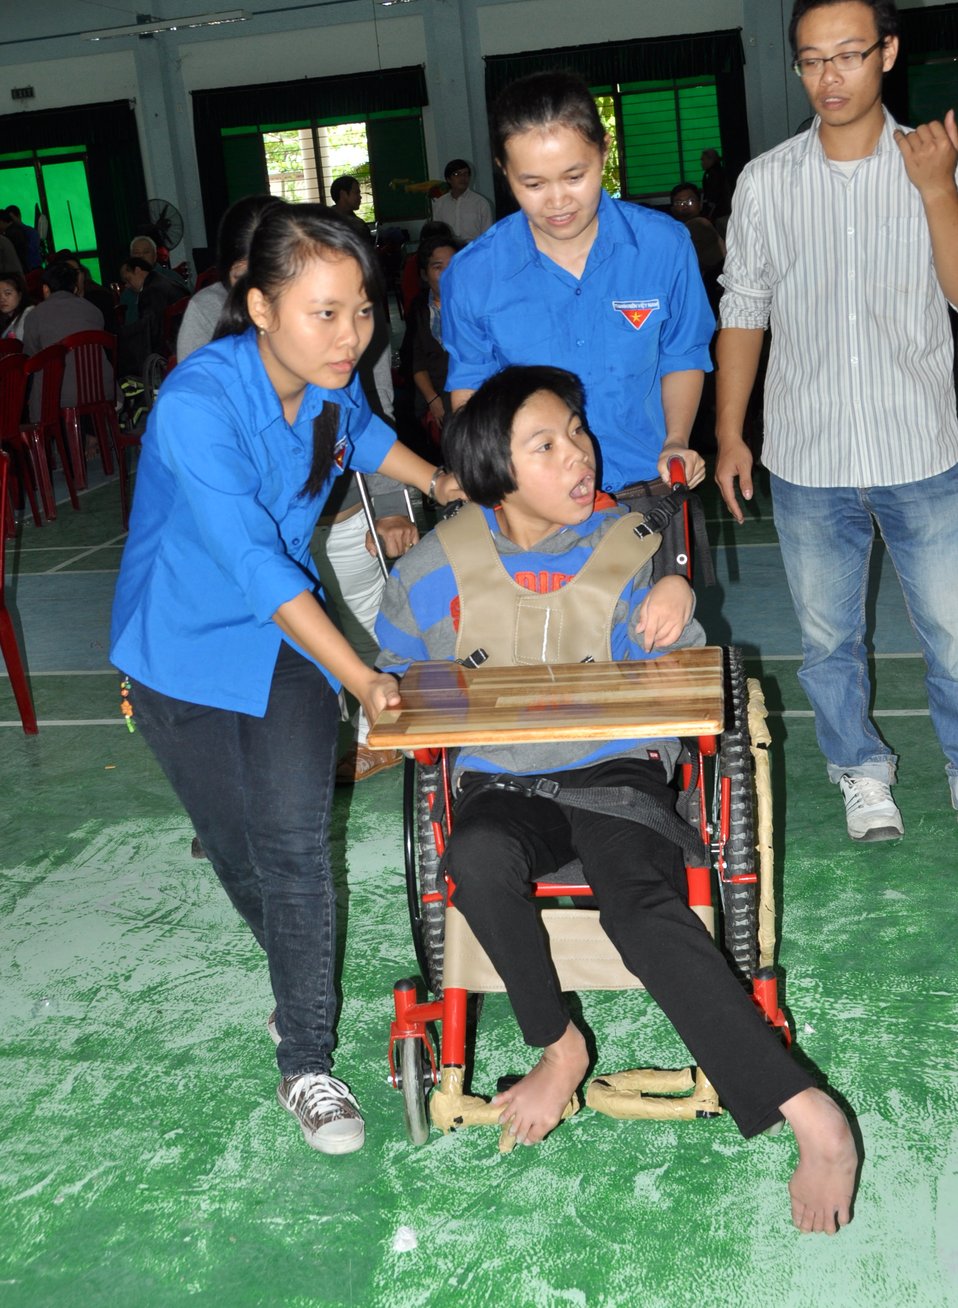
USAID supports delivery of wheelchairs to people with disabilities in Danang.

Danang, December 3, 2013.